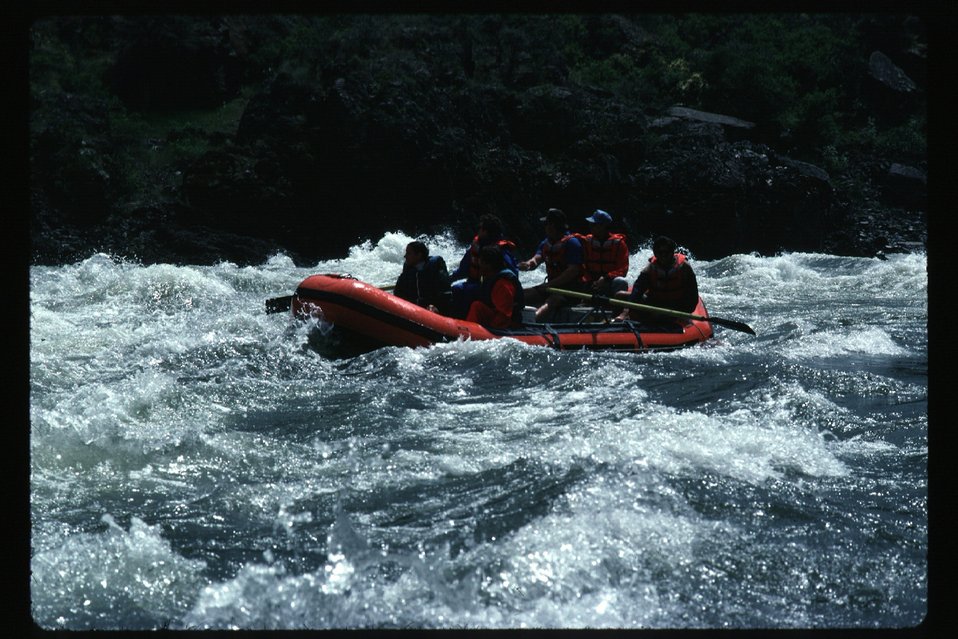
White water rafting Lower Salmon River Cottonwood Field Office UCSC Upper Columbia Salmon Clearwater District